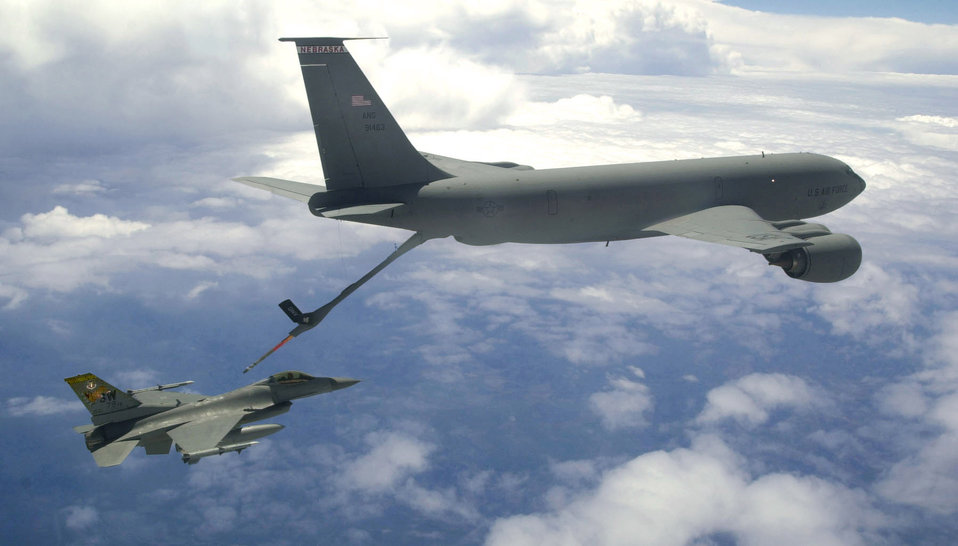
Tiger meets tanker

OVER COLORADO -- A KC-135 Stratotanker From the Nebraska Air National Guard refuelings an F-16CJ during a large force employment exercise in conjunction with the inaugural Tiger Meet of the Americas held in Colorado. The